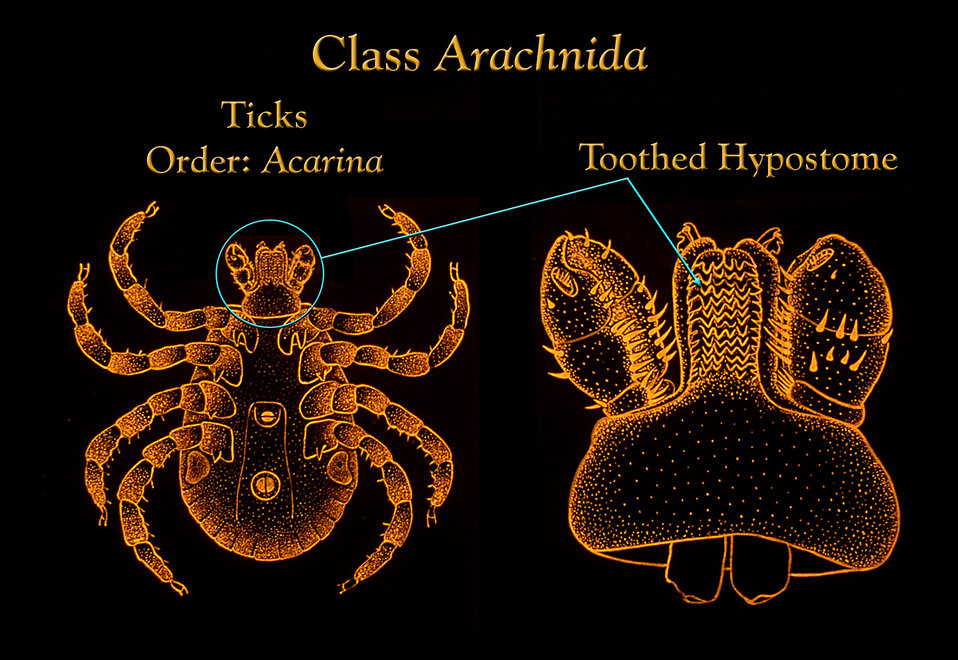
This illustration depicts the morphologic features of a tick from the Order Acarina focusing on the hypostome mouth part.